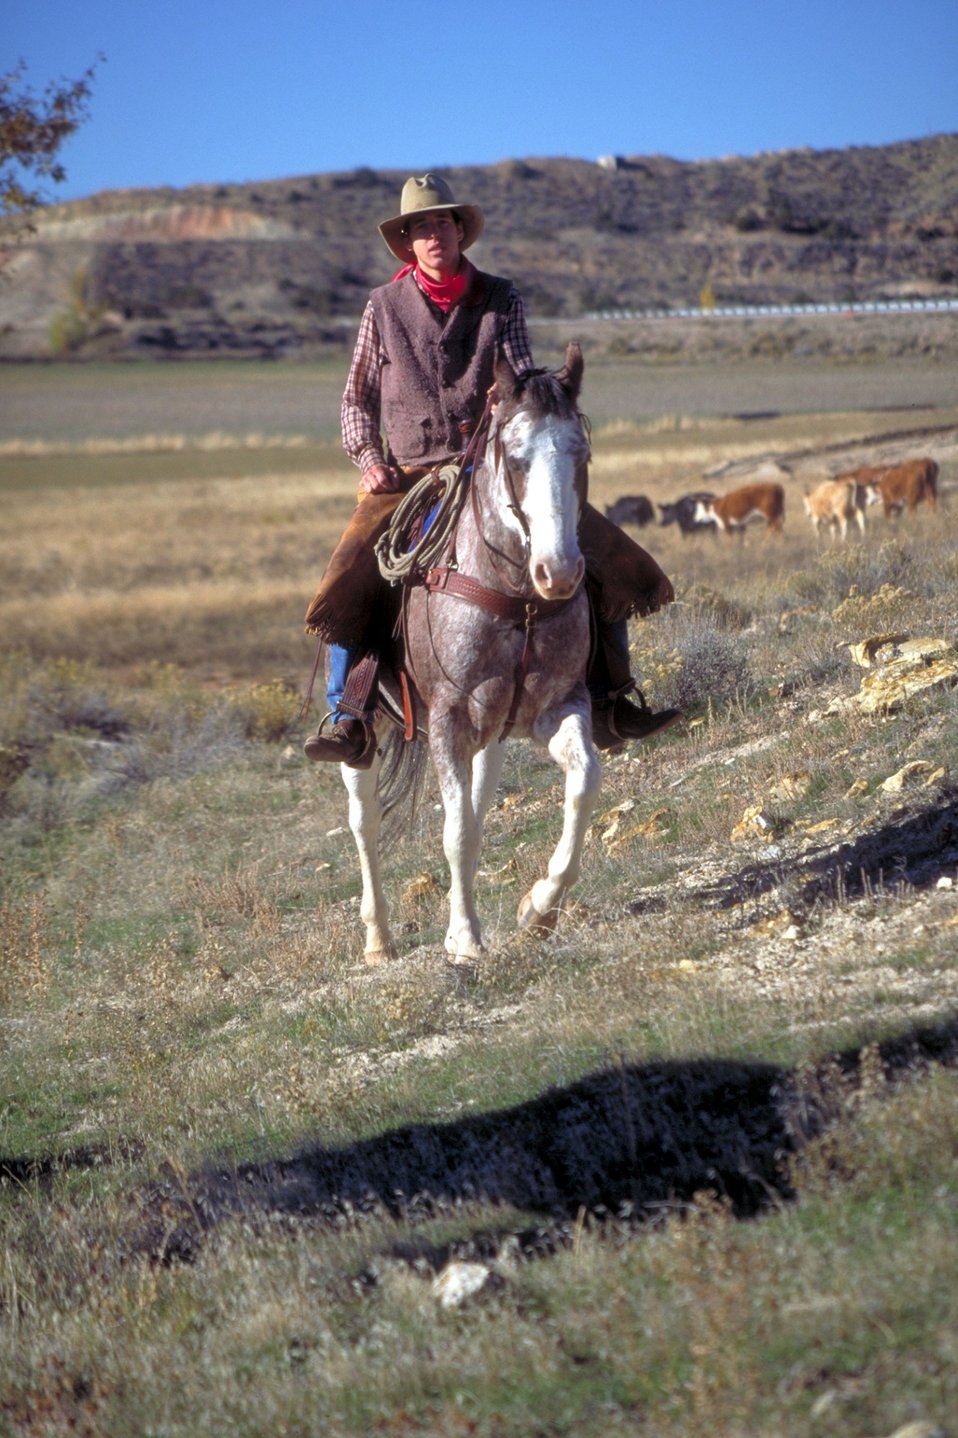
Working cowboys living near Vernal, Utah.